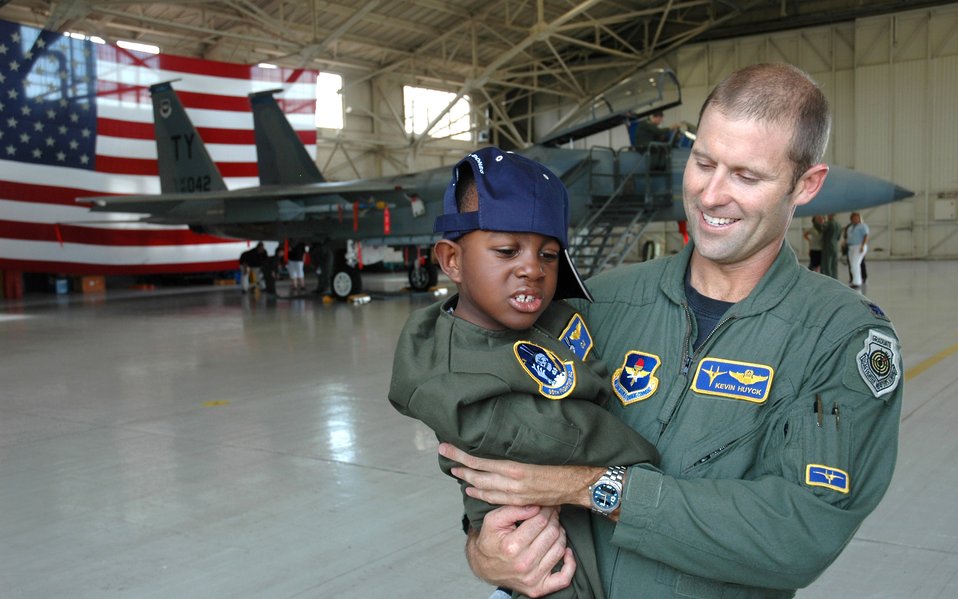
Today's finest teach tomorrow's pilots

C.J., the youngest participant in the Pilot for a Day program hosted Oct. 2 at Tyndall Air Force Base, Fla., explains how excited he is to fly the F-15 Eagle simulator to Lt. Col. Kevin Huyck, the 95th Fighter Squadron commander.Three local children diagnosed with serious iillnesses participated in the event.